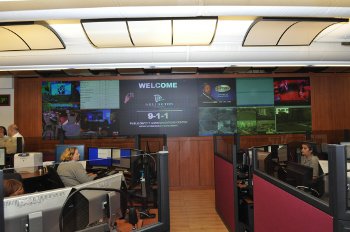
9-1-1 response center

Next Generation 9-1-1; Arlington, VA. November 23, 2010